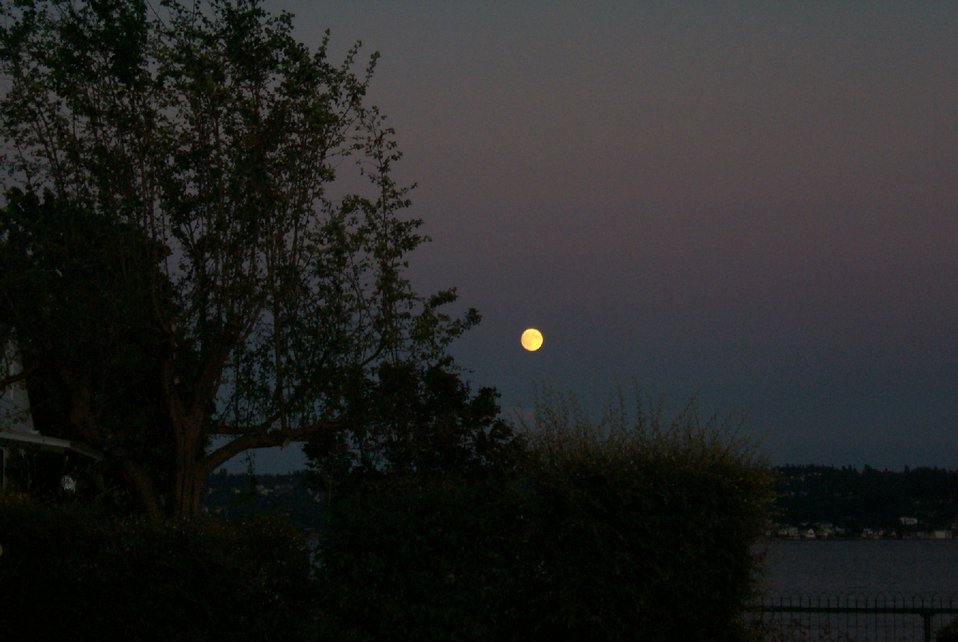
Moonrise over Tacoma as seen from Point Fosdick.